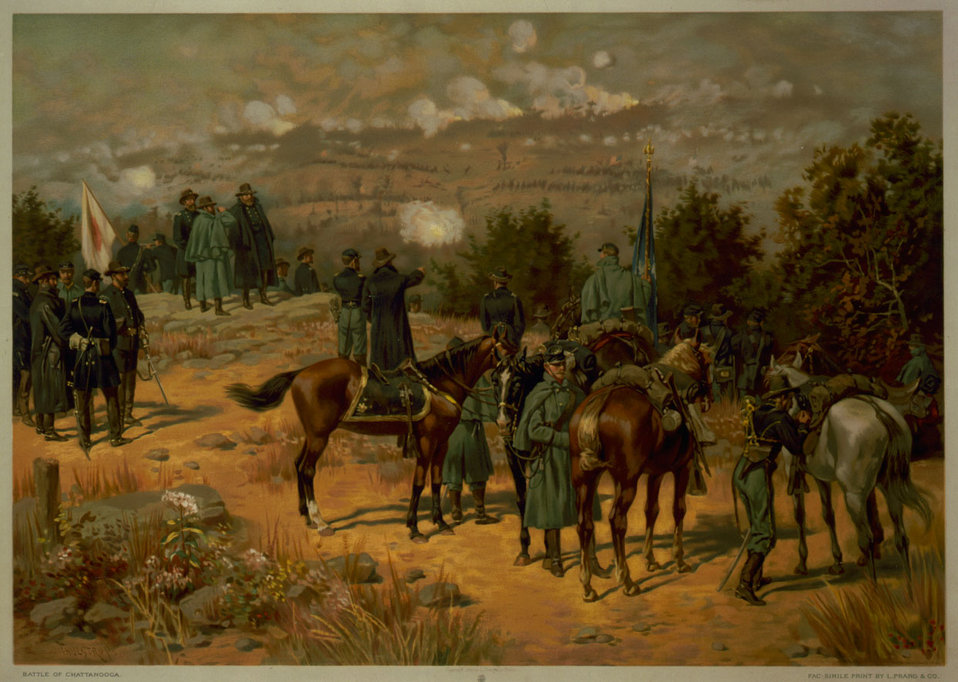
Painting by Thure de Thulstrup of the 'Battle of Chattanooga' (depicting the Battle of Missionary Ridge) of the Chattanooga Campaign.